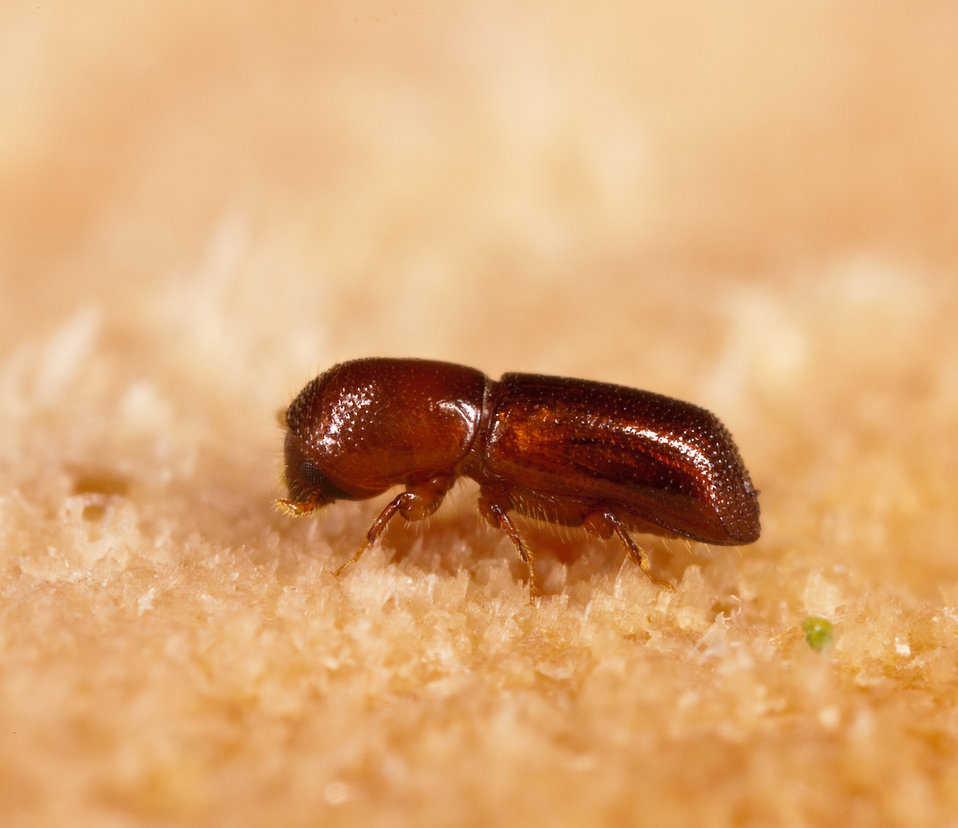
An image of a female redbay ambrosia beetle (Xyleborus glabratus) approximately 2 mm long on May 21, 20123.